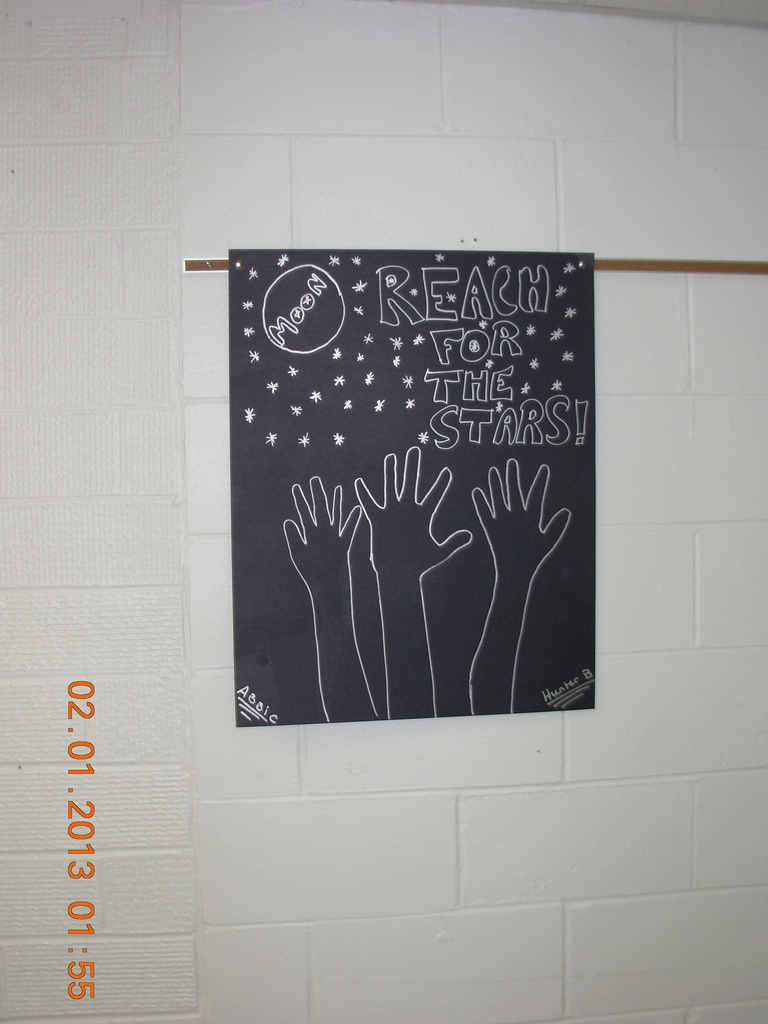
Iowa's SAFE Coalition, NDFW 2013

Van Buren County, IA. SAFE Coalition high school student run groups fighting issues of drug, alcohol, and tobacco abuse during NDFW 2013.